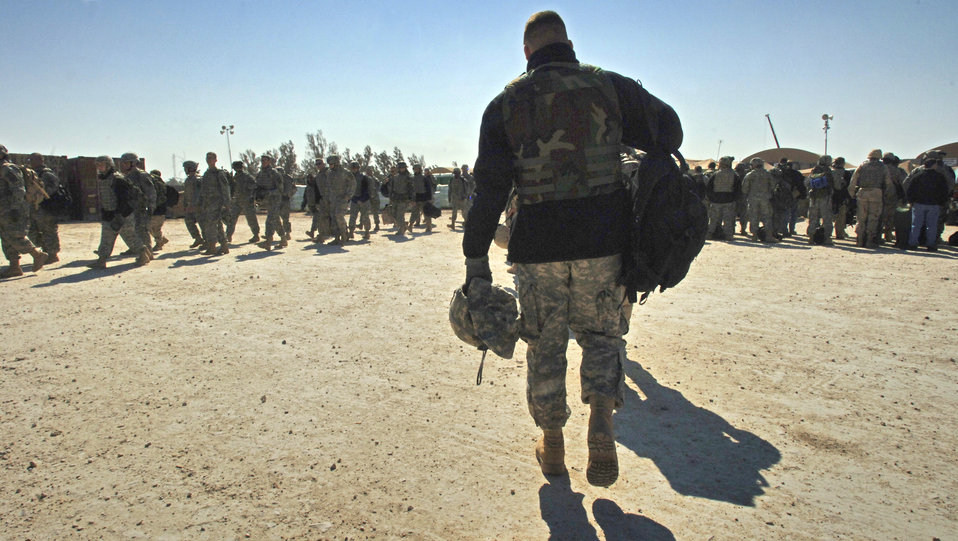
Troop movement

Personnel arrive (right) and depart at Sather Air Base, Iraq, Saturday, Feb. 18, 2006.